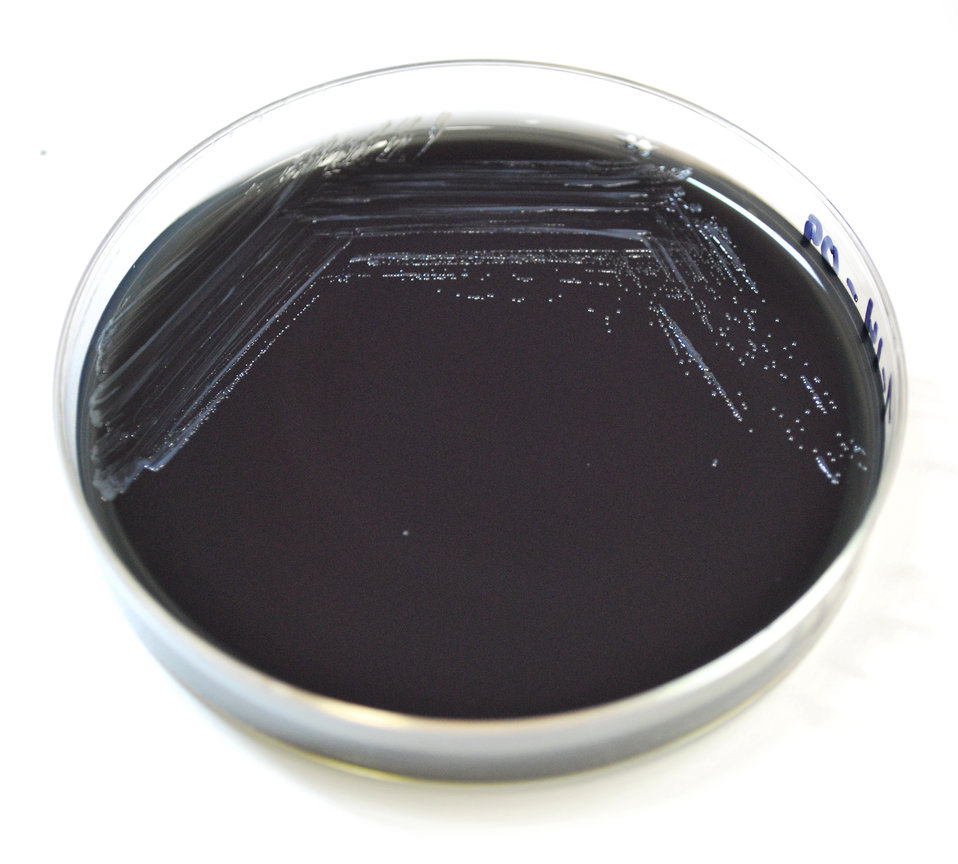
This image depicts a Petri dish containing a buffered charcoal yeast extract (BCYE) agar medium, which had been inoculated with Gram-negative Francisella tularensis live vaccine strain (LVS) bacteria. F. tularensis is the pathogen responsible for causing the disease tularemia. This was the appearance of the colonial growth after 48 hours of incubation. What is tularemia?